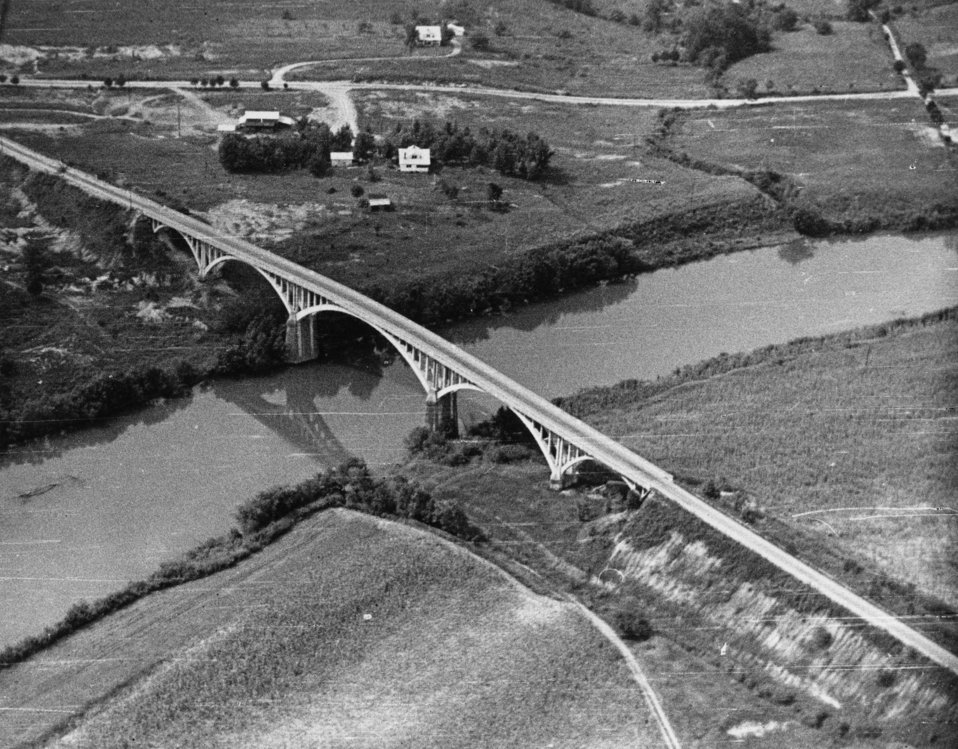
Aerial of Oak Ridge